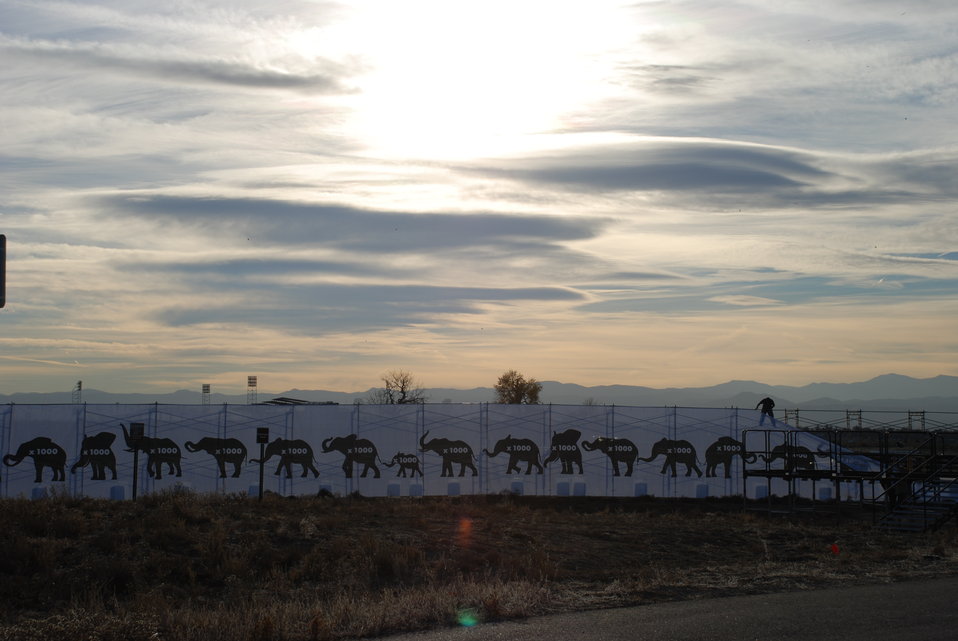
Ivory Crush 2013